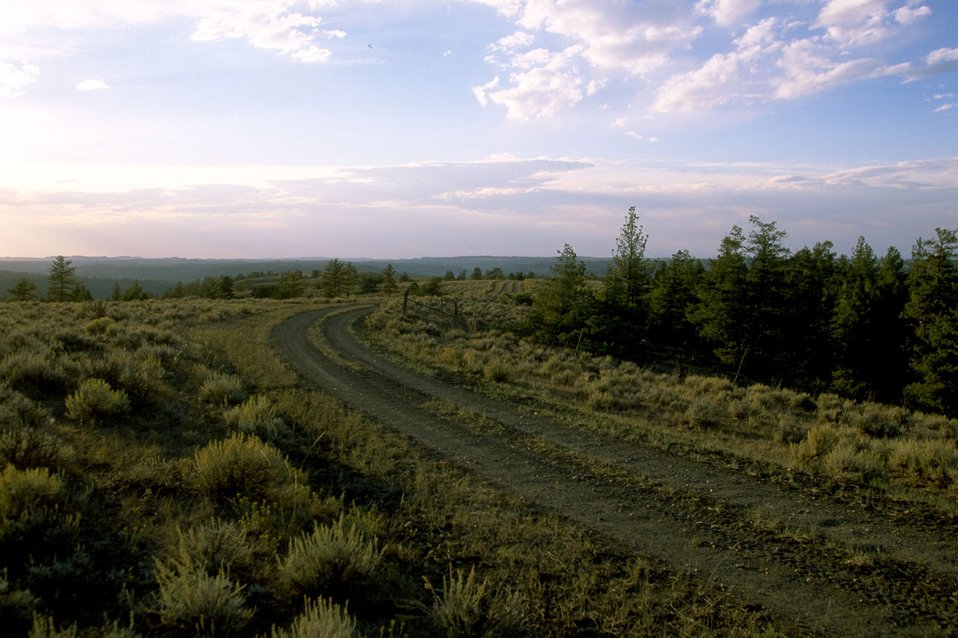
Missouri Breaks Scenery